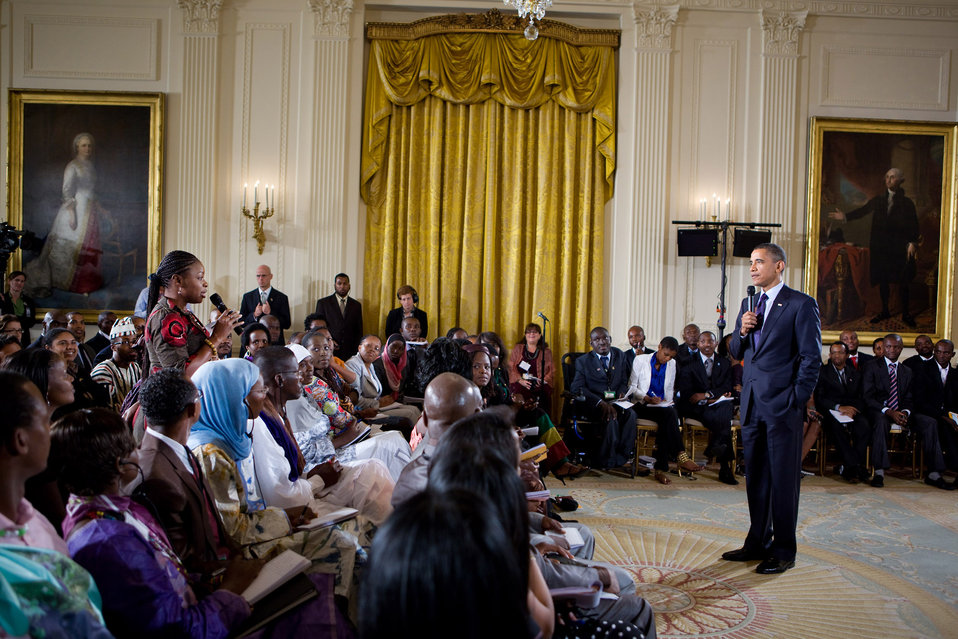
President Obama Listens to a Question from Shamima Muslim of Ghana

President Barack Obama listens to a question from Shamima Muslim of Ghana during a town hall-style meeting with young African leaders in the East Room of the White House in Washington, D.C., on August 3, 2010.